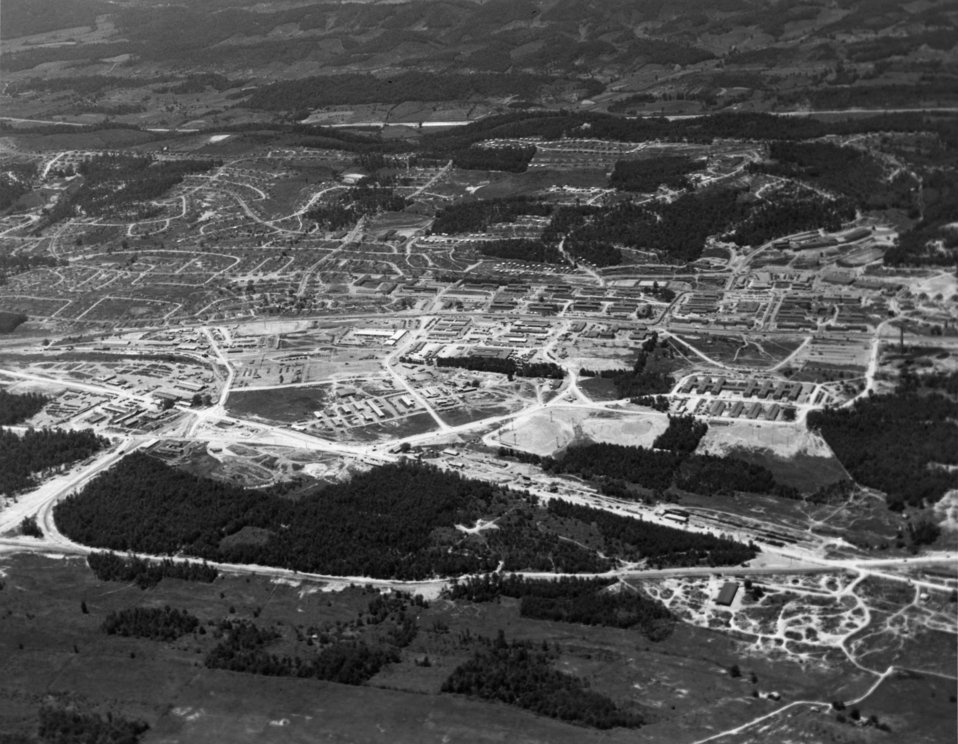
Aerial of Oak Ridge